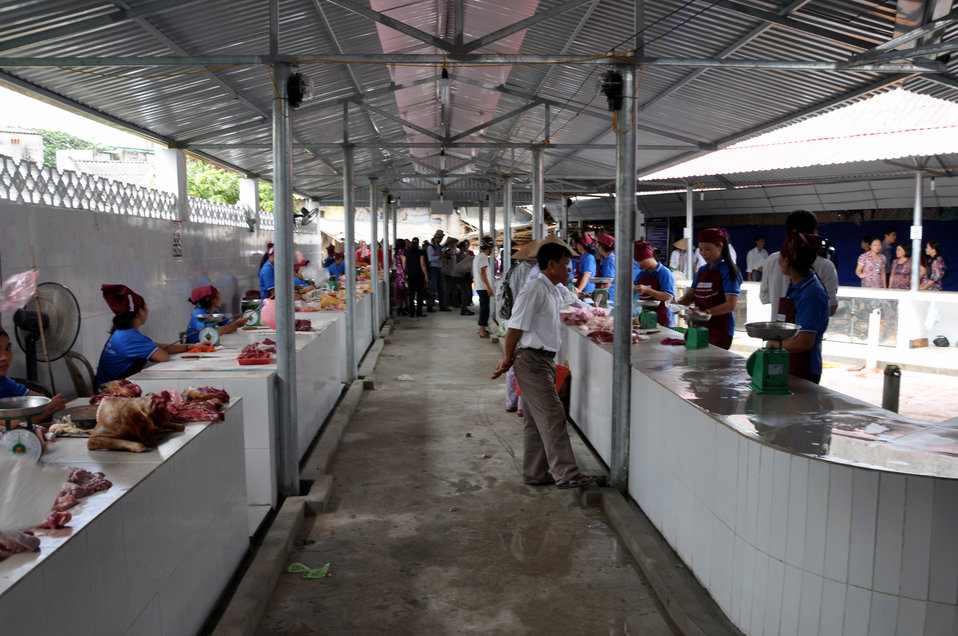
Handover Ceremony Hoa Mac Market Ha Nam

October 26, 2012